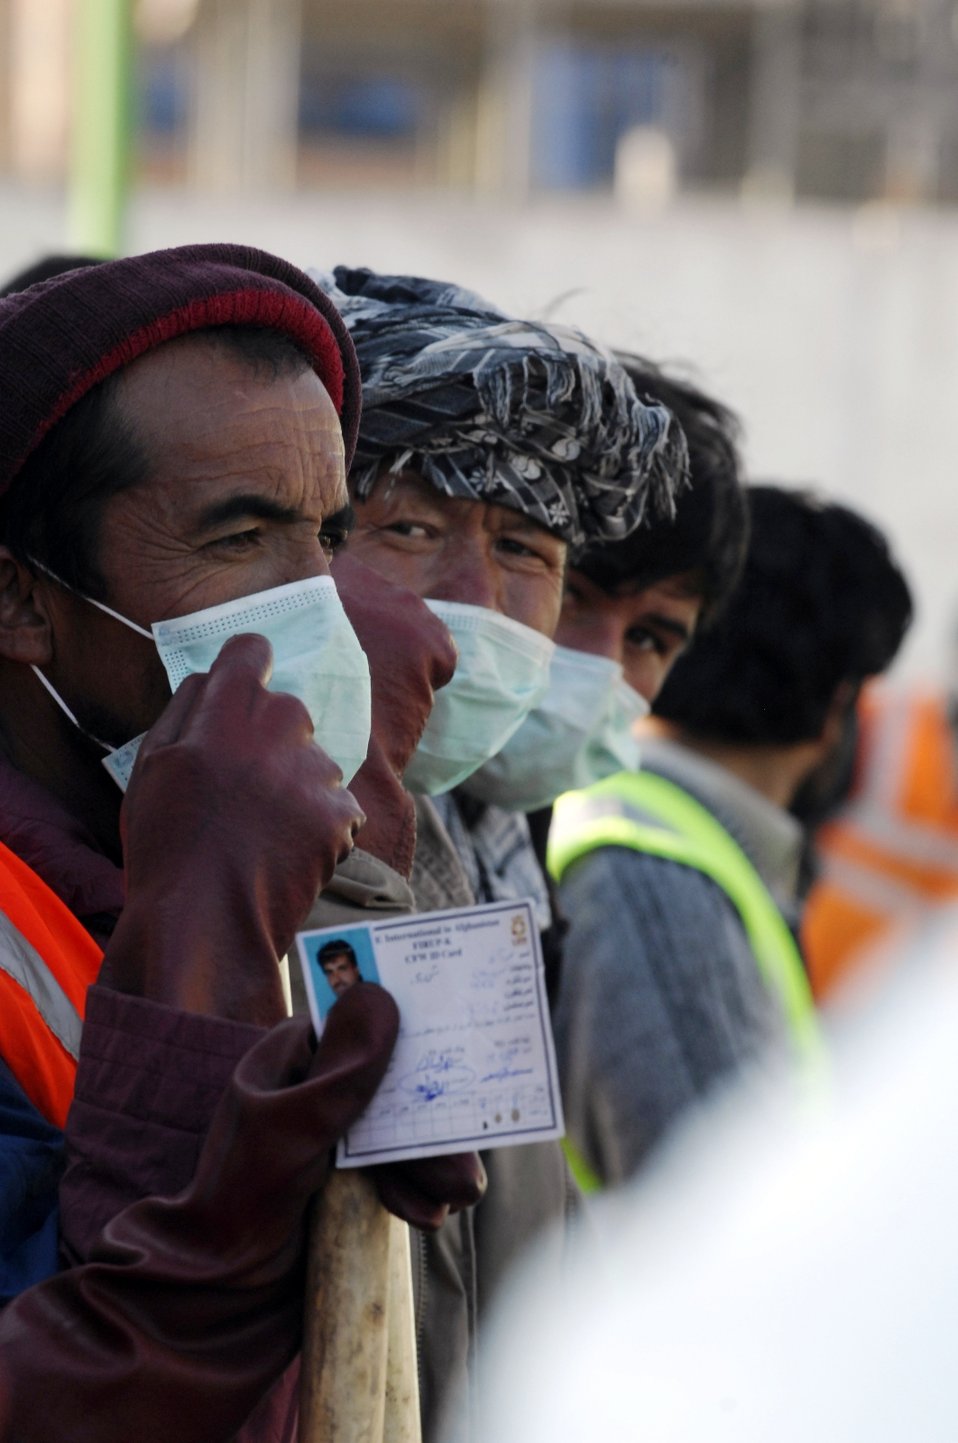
Care74